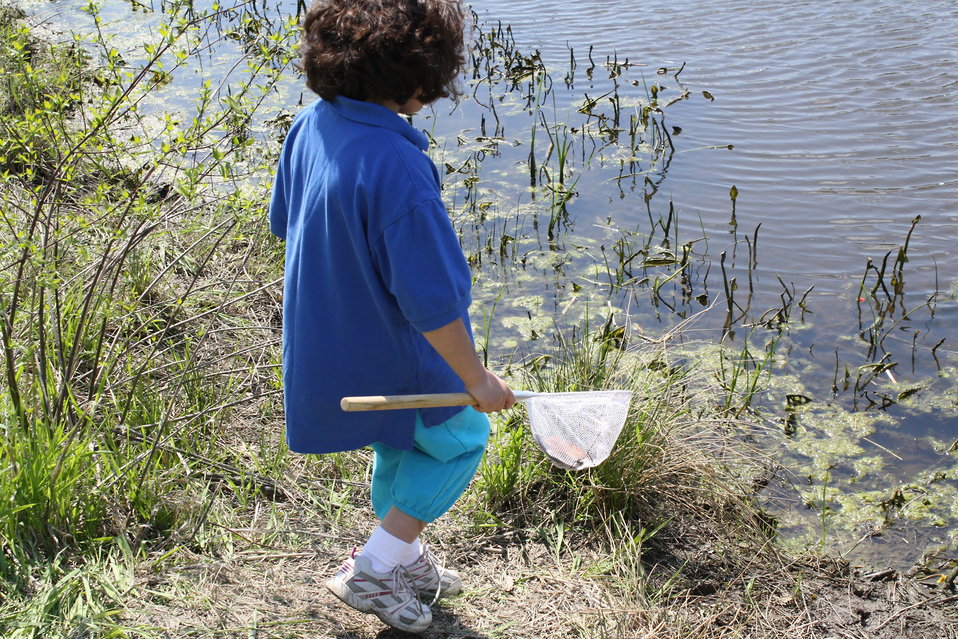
Avery releasing turtle

Avery Lapis releases a turtle back to the pond during the USFWS fishing derby.